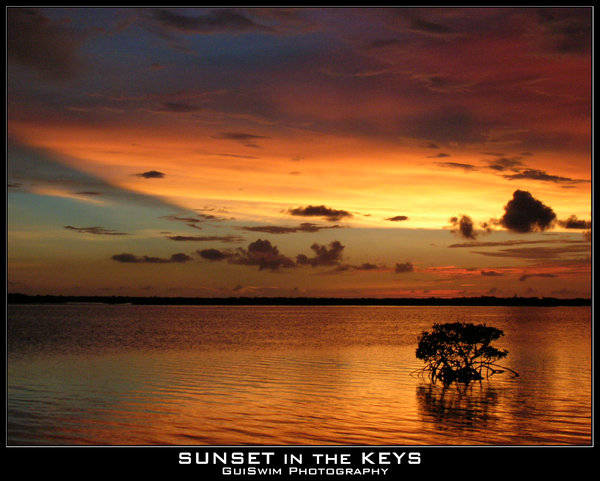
Uploaded by request of Dan Curhan

Taken in the Florida Keys.

The clump of mangroves in the bottom right corner was actually only about a foot tall!